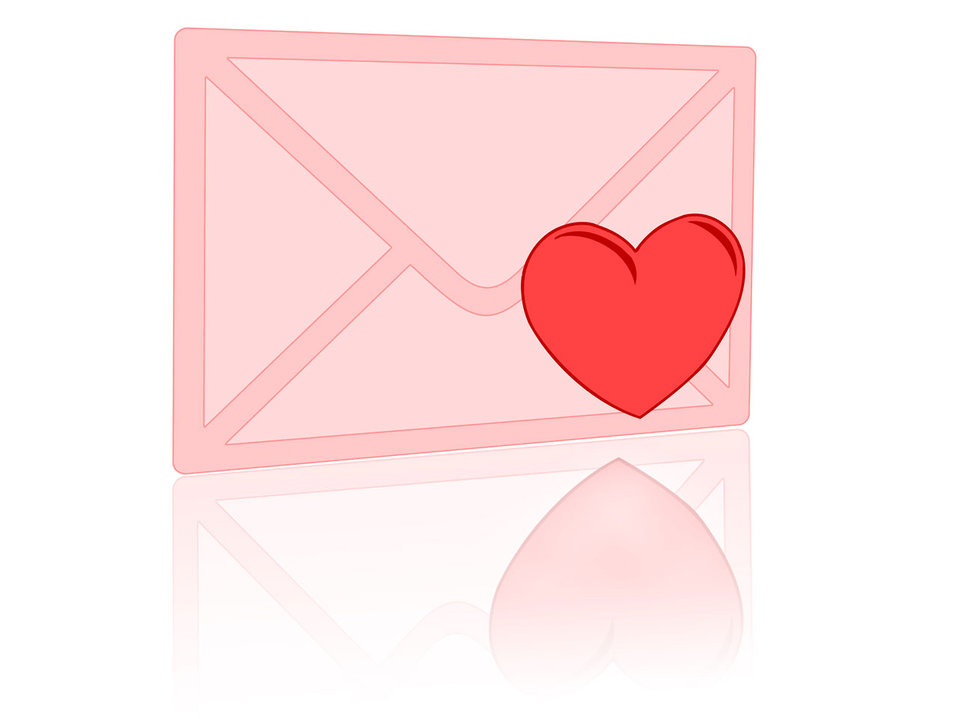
Love letter

Pink envelope with a red heart on it.